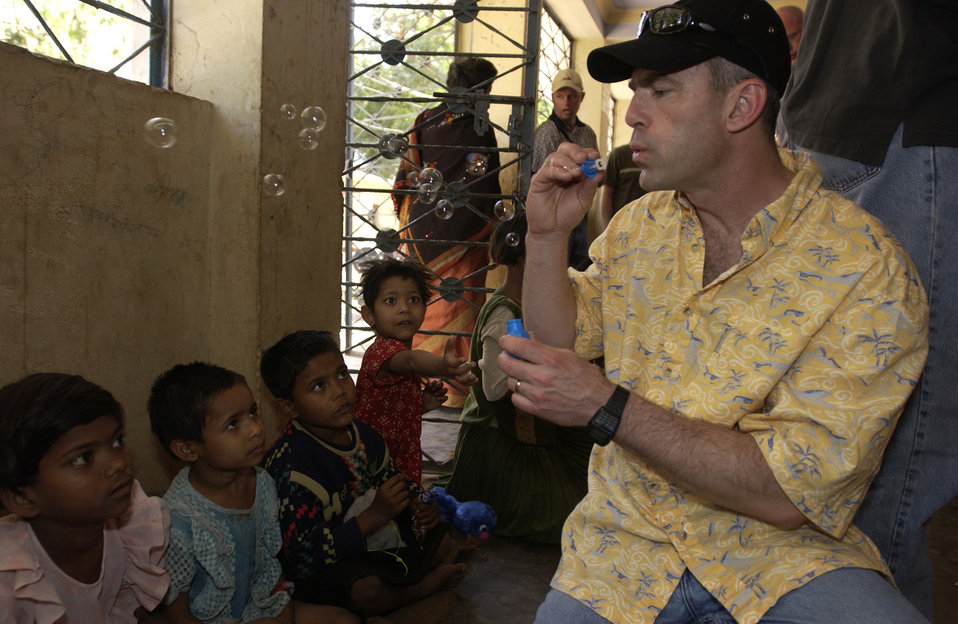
Cultural awareness

GWALIOR, India -- Lt. Col. Mark Louder shows children how to blow bubbles during a visit to a local orphanage Feb 21. About 130 airmen from Elmendorf Air Force Base, Alaska, are here for Cope India '04, a bilateral dissimilar air combat exercise with the Indian air force. Colonel Louder is the 19th Fighter Squadron commander at Elmendorf.